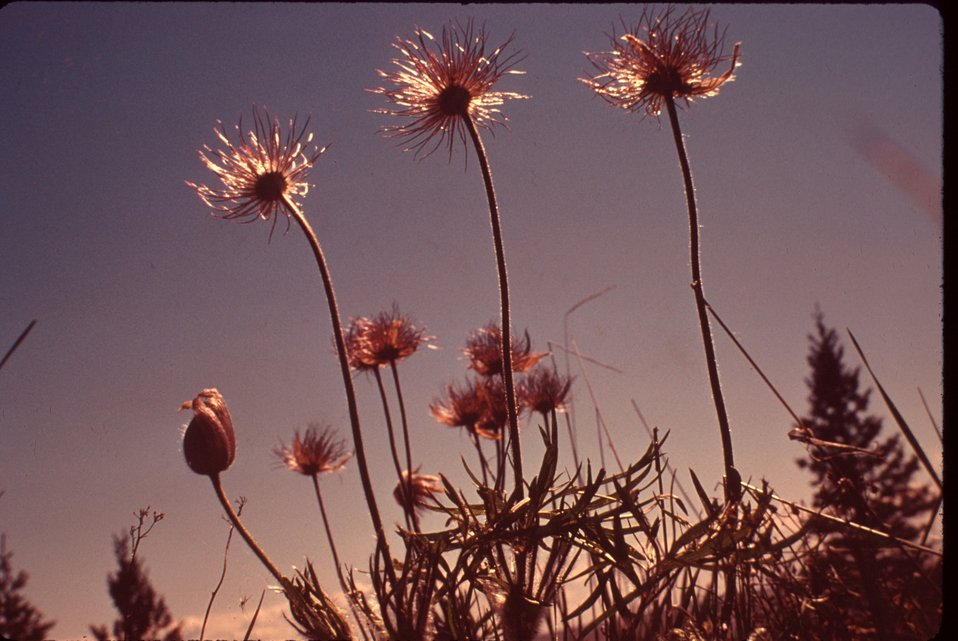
Pasque flower Wildflower